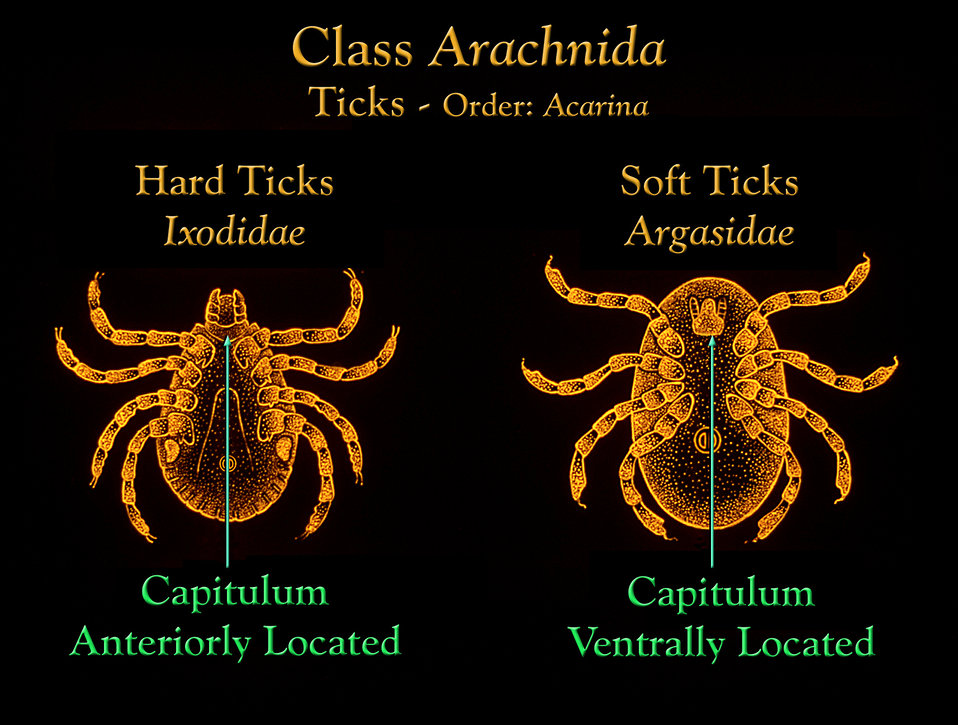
This drawing compares the location of a Ixodidae hard tick's capitulum with that of an Argasidae soft tick.